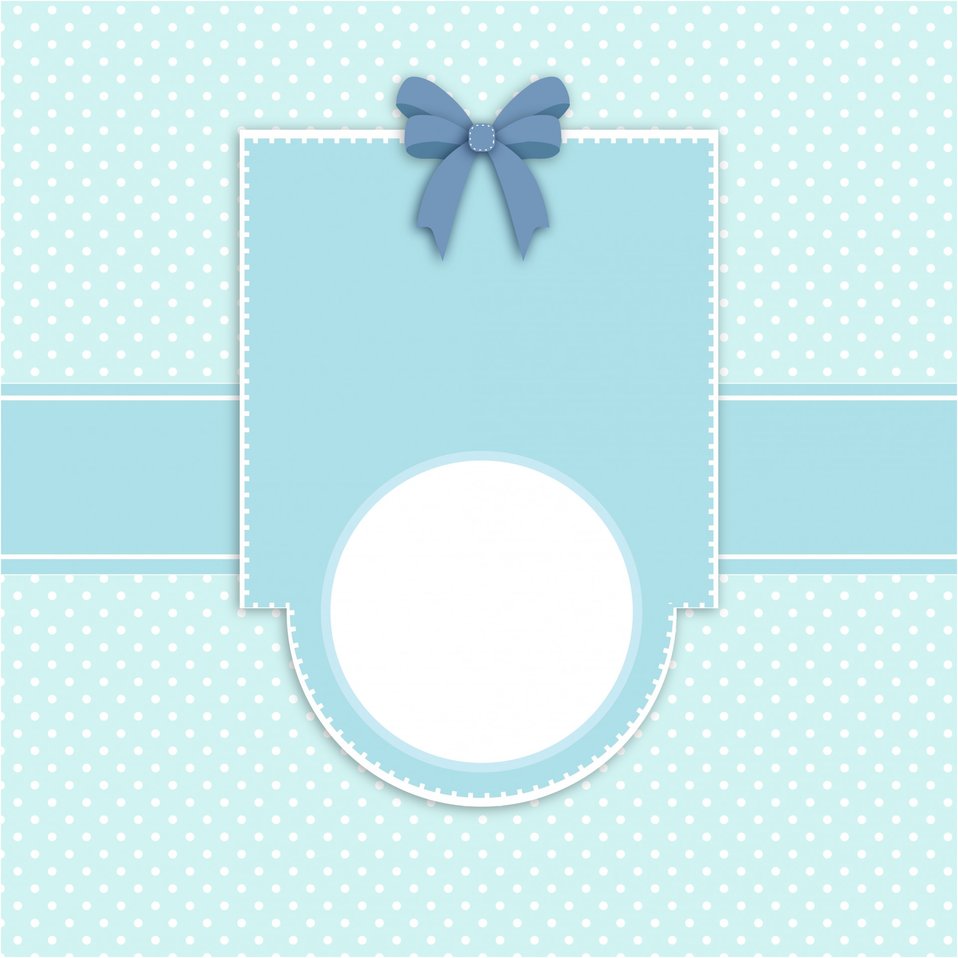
Card invite announcement template

Blue and white polka dots card template for announcements, invitations, birth, wedding, baby shower etc.